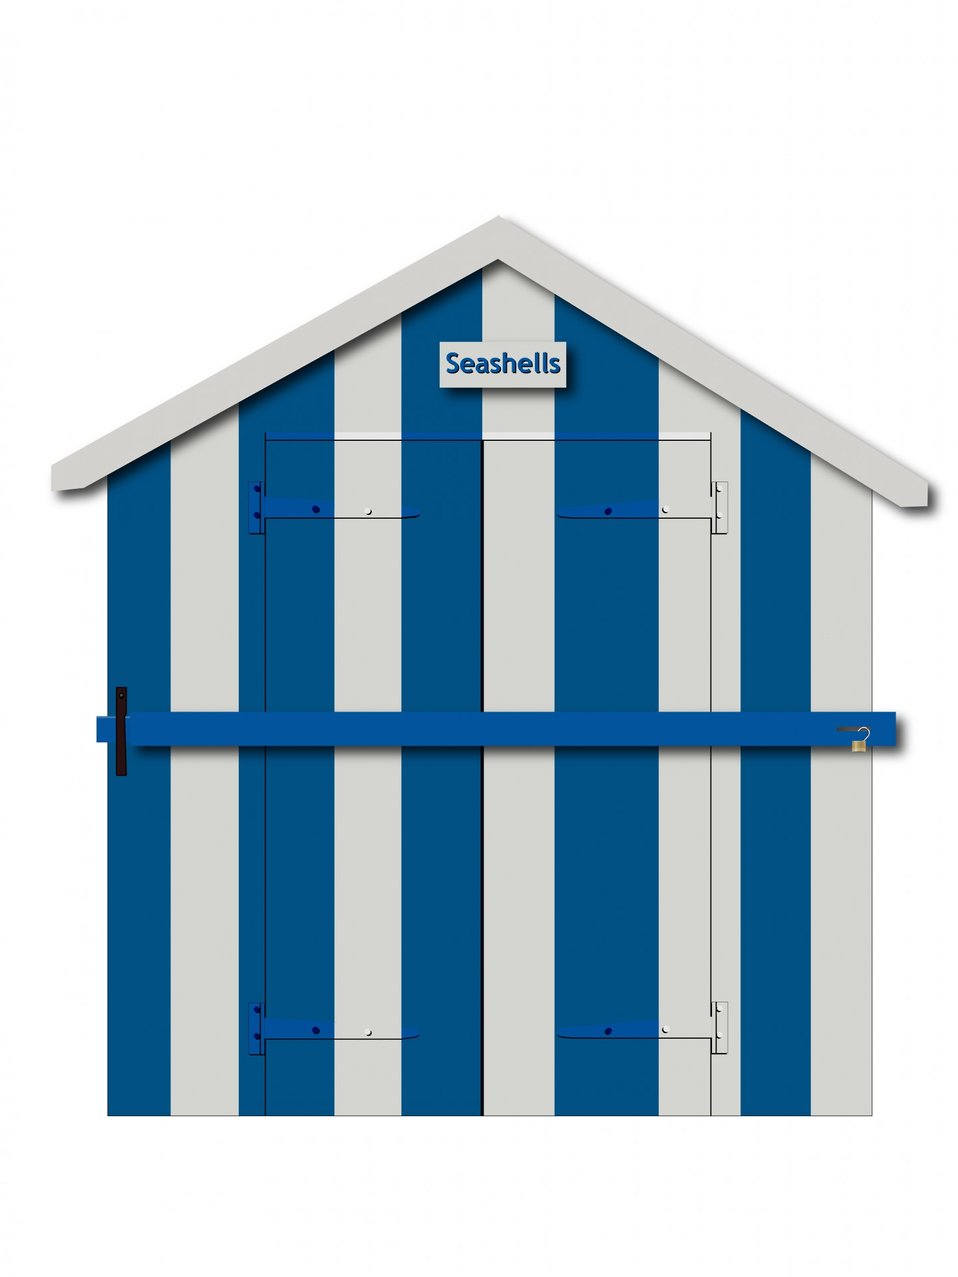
Beach hut wooden clipart

Blue and white stripes wooden seaside beach hut, house isolated on white background.